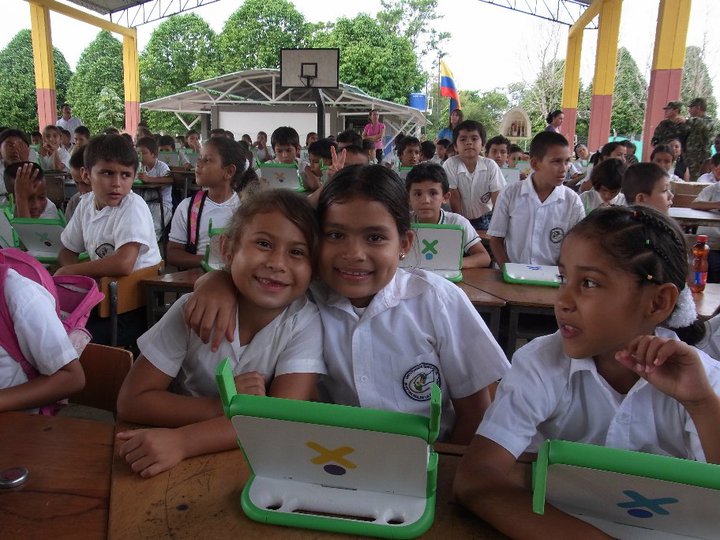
Young Colombian children smile for a photo in La Macarena (Meta Department), Colombia, during an event with @StateDept Colombia tech.del participants on July 13, 2010.